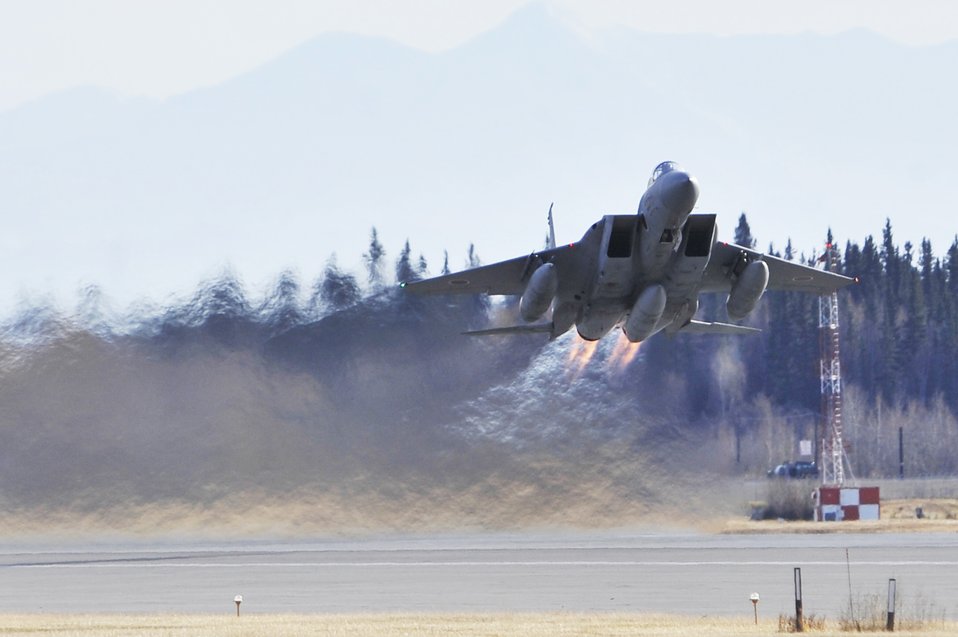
Off we go

An F-15 from the Japan Air Self-Defense Force takes to the sky during Red Flag-Alaska, Oct. 9, 2009, at Eielson Air Force Base, Alaska. Red Flag-Alaska provides participants 67,000 square miles of airspace for realistic combat situations.